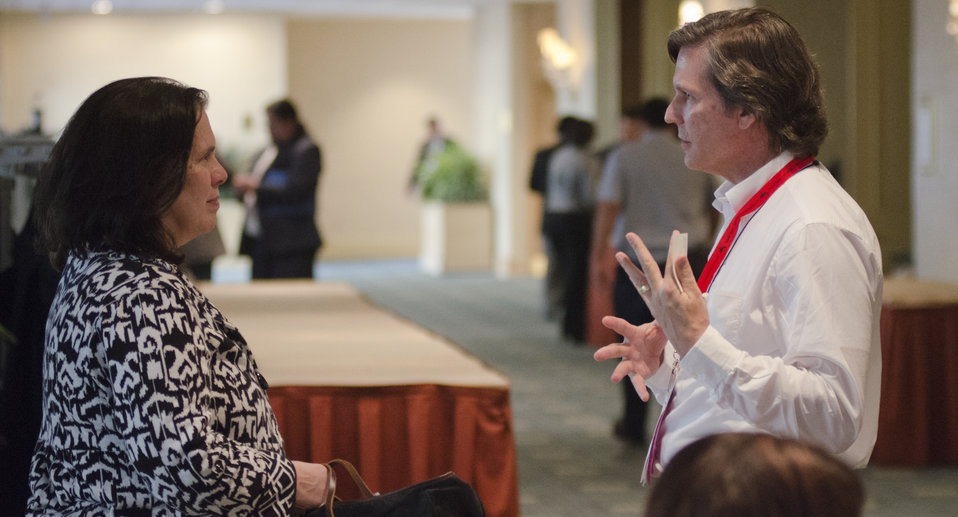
Agriculture Office of Tribal Relations Senior Advisor to the Secretary Janie Hipp listens to the concerns of Ewiiaapaayp Band of Kemeyaay Indians Executive Director and Chief Operating Officer Willie Macklin during the National Congress of American Indians Tribal Nations Legislative Summit at L’Enfant Plaza Hotel in Washington, D.C. on Wednesday March 7, 2012.